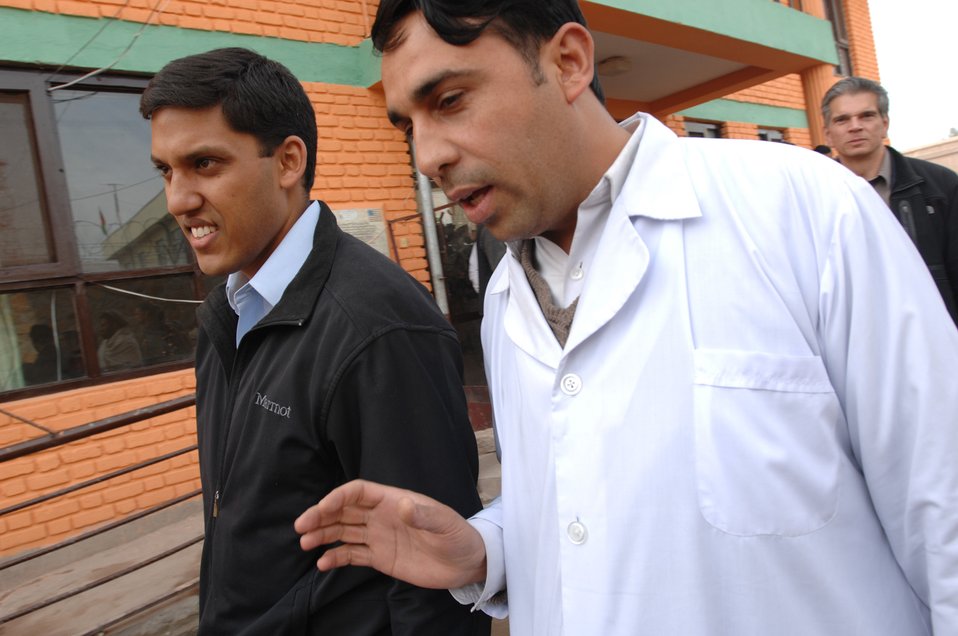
110209sv Shah179

Dr. Rajiv Shah, Administrator of the United States Agency for International Development (USAID), meets with local officials in Surkh Rod, Nangarhar province on Wednesday, February 9, 2011. (S.K. Vemmer/Department of State)